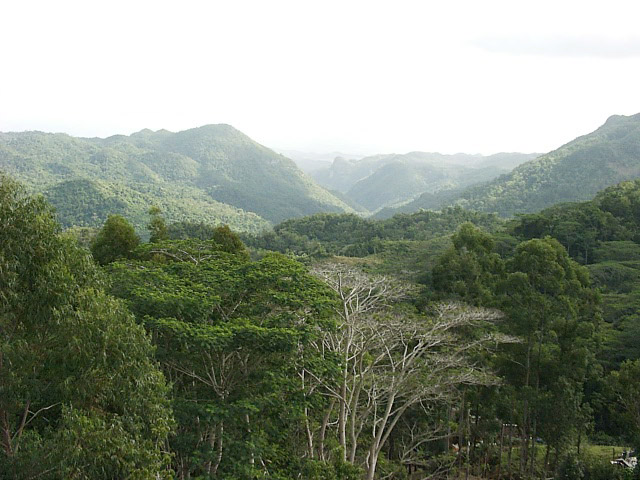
Escambray Mountains